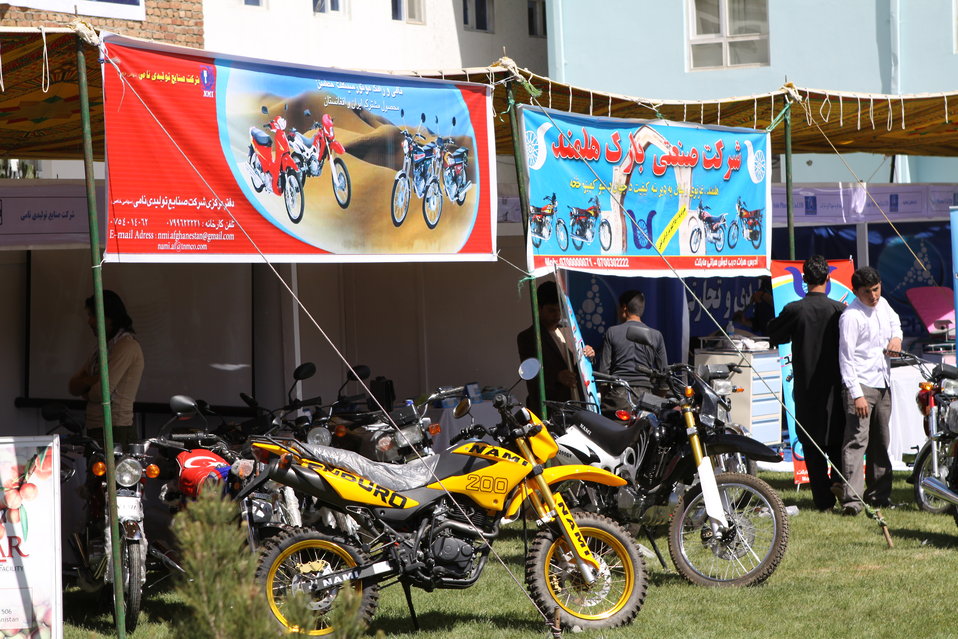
100522 ATVI Graduation 017